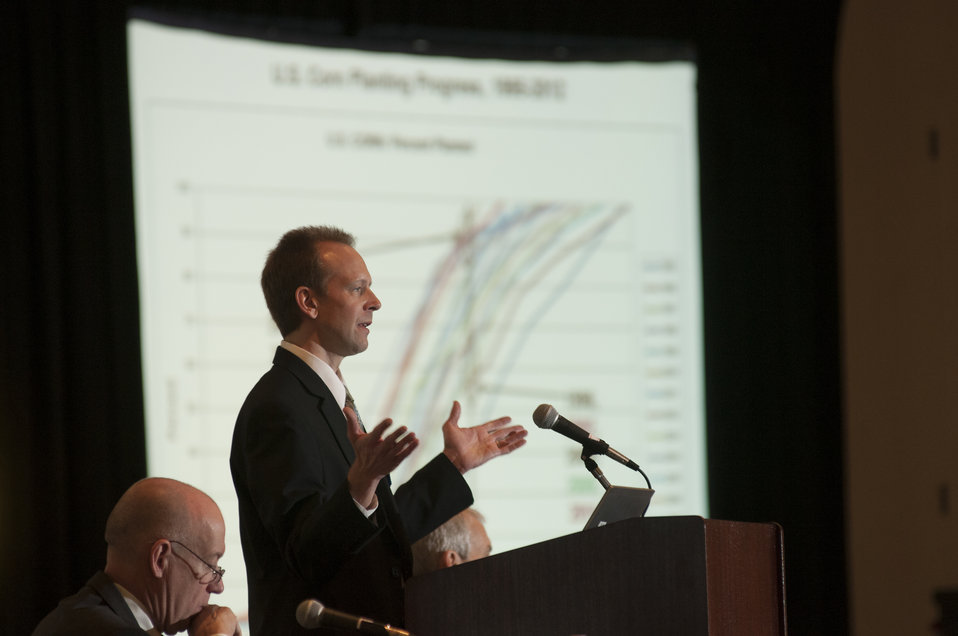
The U.S. Department of Agriculture (USDA) 2013 Agricultural Outlook Forum was held at the Crystal Gateway Marriott Hotel in Arlington, VA on Friday, Feb. 22, 2013. The breakout session on Grains and Oilseeds Outlook analyzed the metrological factors behind last summer’s historic drought, evaluated the effects of summer weather on corn and soybean yields, and provided the 2013 supply and demand outlook for wheat, corn, and soybeans.